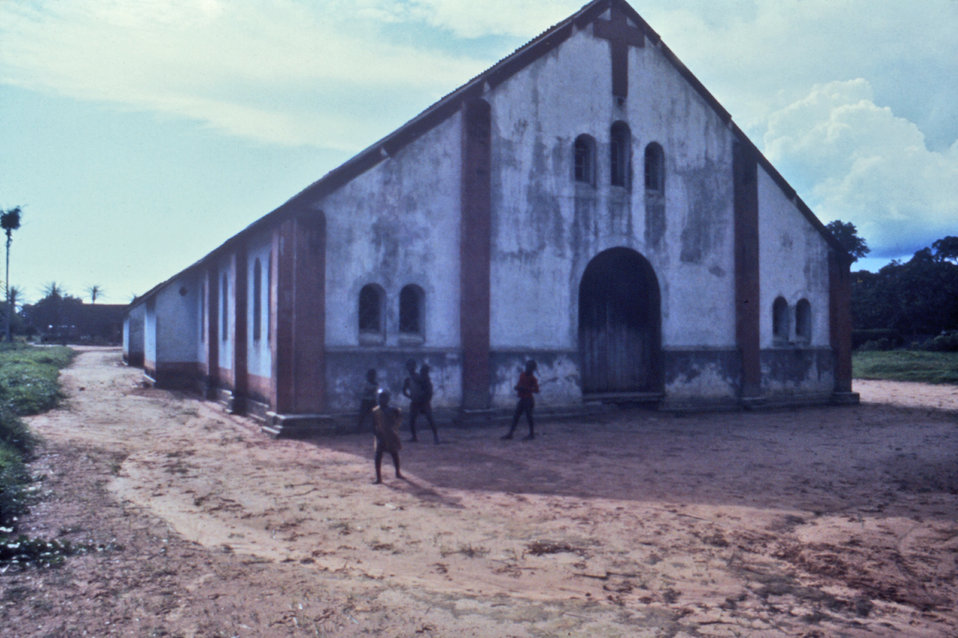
This 1976 photograph depicted a number of children standing outside of a church in Yambuku, Zaire at the time of an Ebola outbreak.